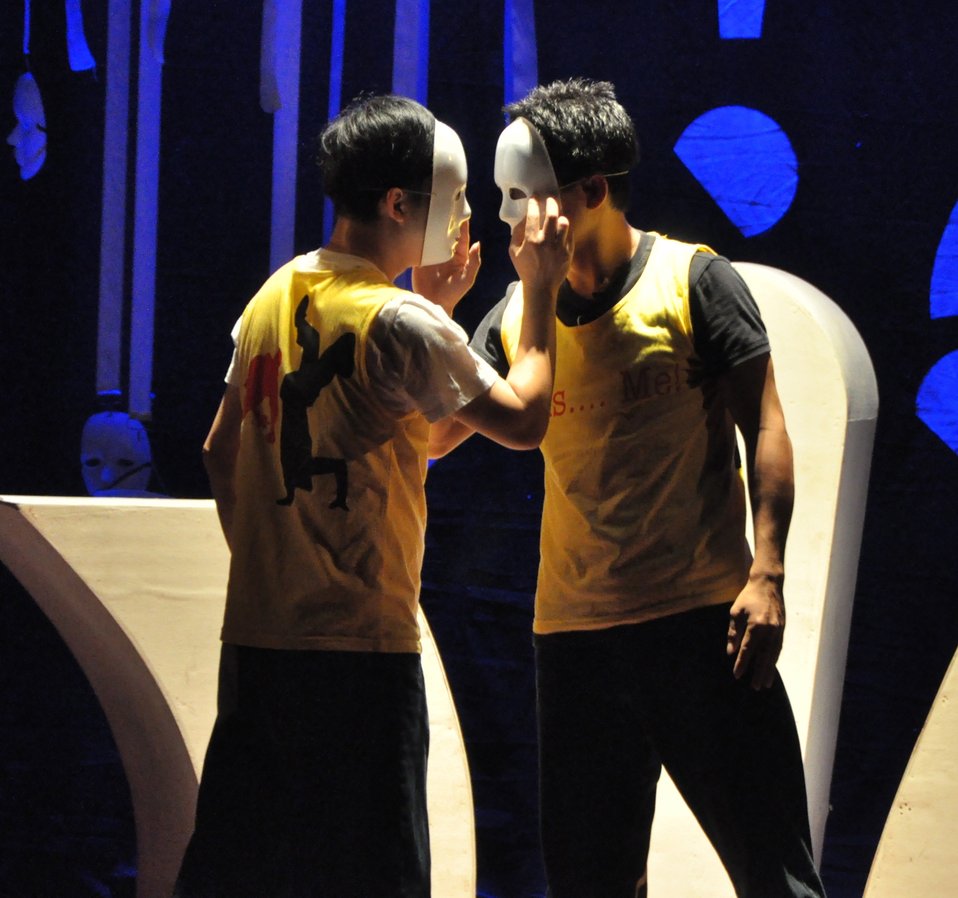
PEPFAR Musical Questions and Exclamations

Hanoi, May 17, 2013